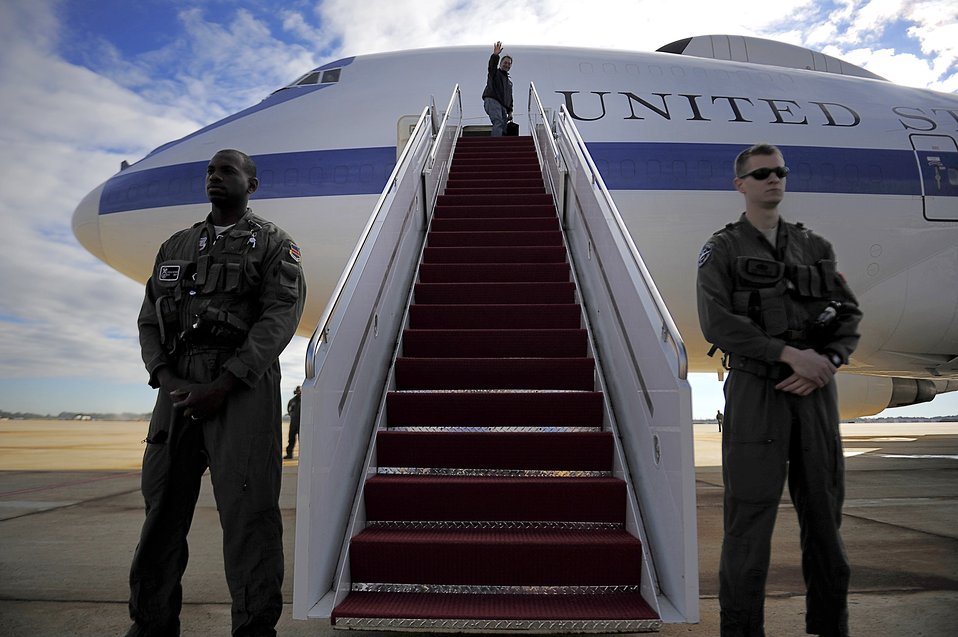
On a jet plane

Secretary of Defense Leon E. Panetta waves as he boards an Air Force E-4B National Airborne Operations Center aircraft Oct. 21, 2011, at Joint Base Andrews, Md. Panetta departed the base to visit defense leaders and U.S. troops stationed in the Asia-Pacific region.